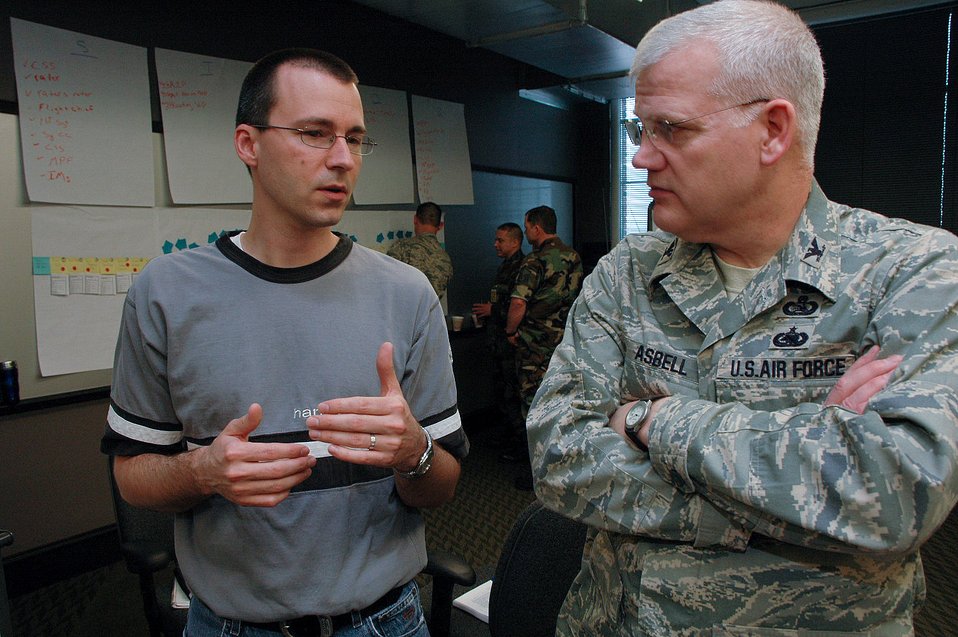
Guard, Harley-Davidson join forces to improve processes

Steve Nelson talks with Col. Billy Asbell May 7 at Harley-Davidson University in Milwaukee. Air National Guard and Harley-Davidson personnel gathered for the Air Force Smart Operations for the 21st century facilitator training: Training the trainers course on process improvement. Mr. Nelson is the Harley-Davidson's process lead for operational excellence. Colonel Asbell is the director of the Air National Guard's AFSO 21 process improvement program.